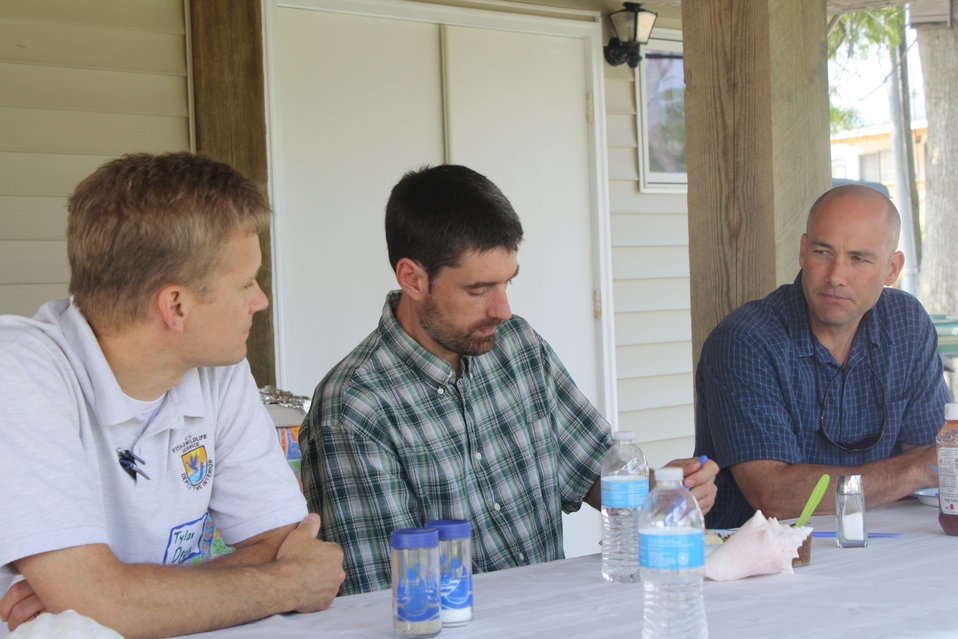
Bavon Beach project

Tylan Dean (USFWS) talking with folks from The Nature Conservancy. TNC owns the strip of shoreline in front of the Bavon Beach community as part of the New Point Comfort Natural Area Preserve.